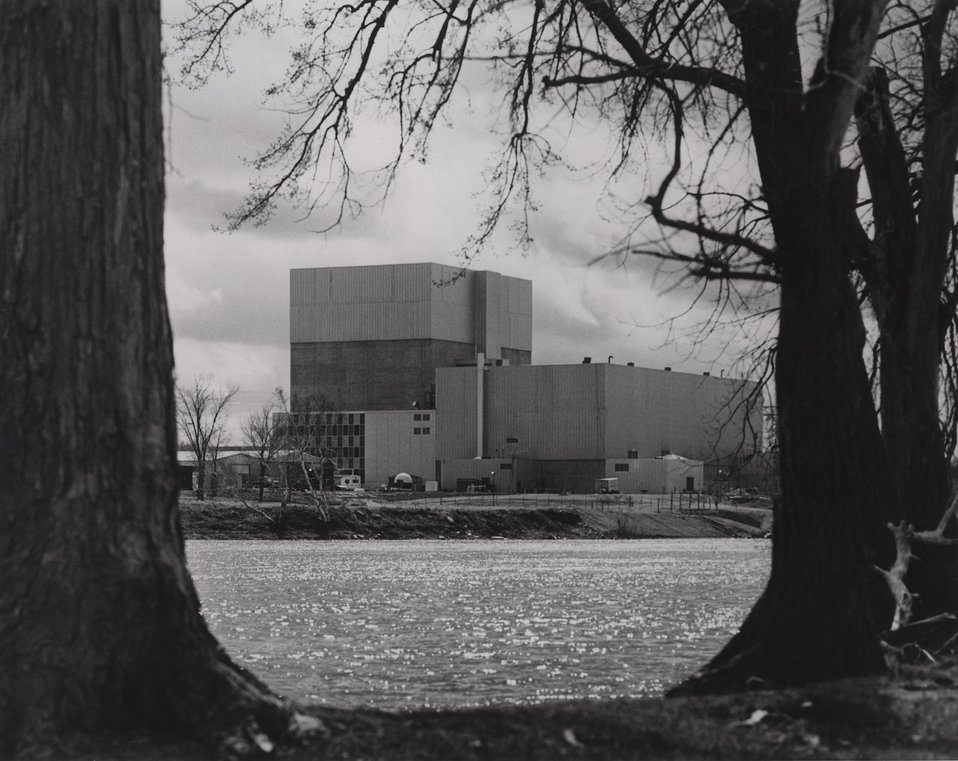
The 545,000 kilowatt Monticello Nuclear Generating Plant, located on the Mississippi River three miles northwest of Monticello, Minnesota.